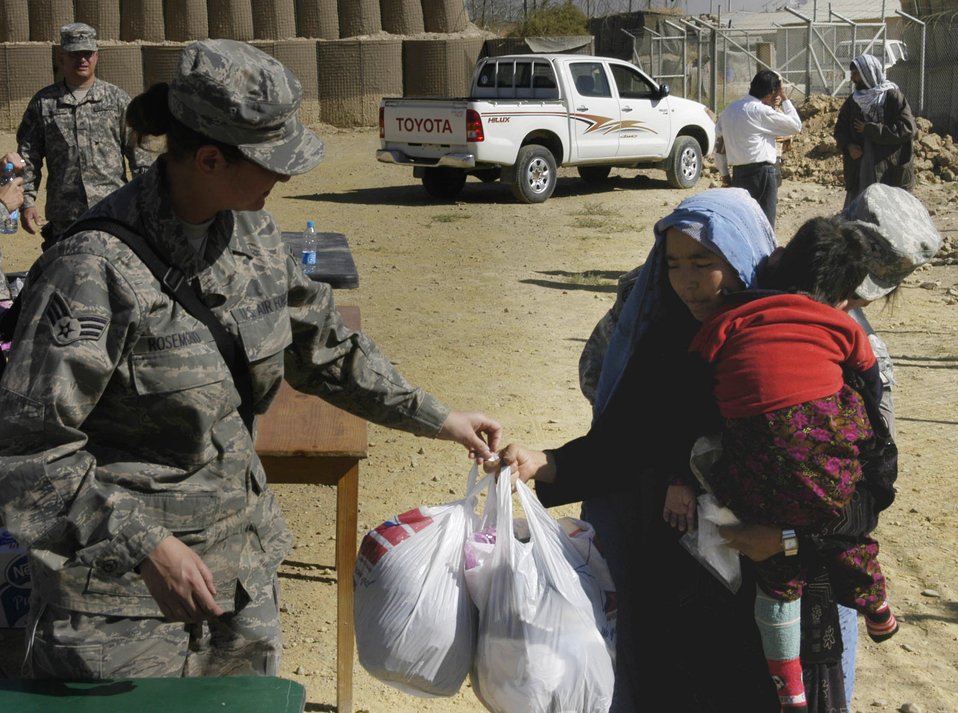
Bagram Airmen help bring better life to Afghan families

Senior Airman Elisa Rosemond pass out bags of clothes to Afghan mother and her child during an Operation Care visit to the Korean Hospital Oct. 17 near Bagram Air Base, Afghanistan. Operation Care is an all-volunteer effort that provides clothes, school and hygiene supplies, toys and candy to Afghan villagers.